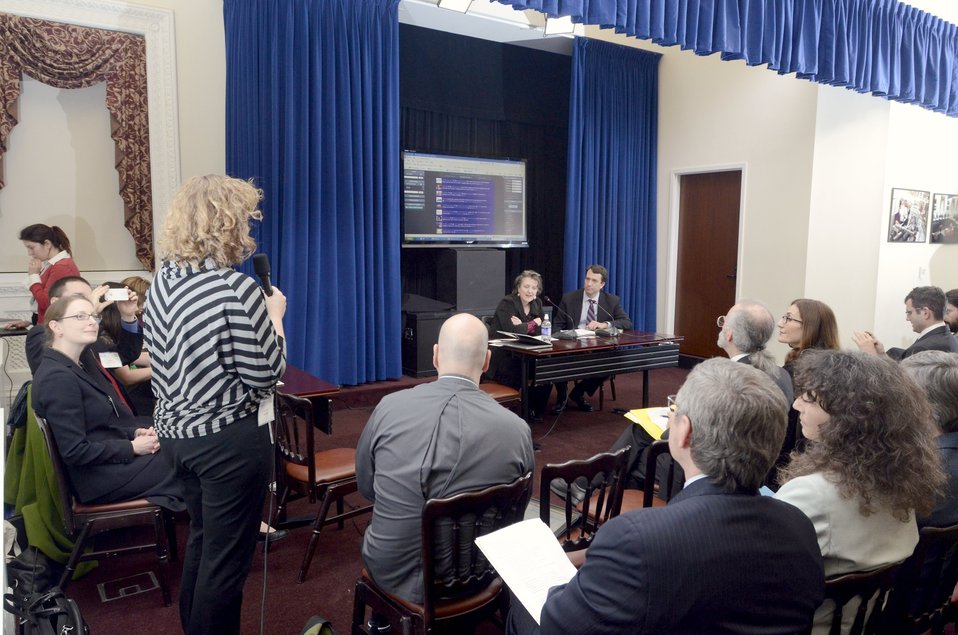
Agriculture Deputy Secretary Kathleen Merrigan and Director, White House Office of Public Engagement Jon Carson asked EcoTrust/FoodHub's Amanda Oborne, to speak about food infrastructure, while at the about the White House, in Washington, D.C., on Monday, March 5, 2012. Food-Hub is emerging as incredible online platform to connect producers and buyers across the Northwest. Through Food-hub, producers can find ways to access new markets, and buyers can find local producers that meet their needs. Food-Hub is also using innovative web platforms and data to facilitate these relationships. Food-Hub received funds from a Rural Business Opportunity Grants (RBOG) program. The program promotes sustainable economic development in rural communities with exceptional needs through provision of training and technical assistance for business development, entrepreneurs, and economic development officials and to assist with economic development planning. The Know Your Farmer Compass event used twitter social media to virtually continue the National Conversation on Local and Regional Food projects and how they offer economic opportunities to local farmers, ranchers and food entrepreneurs.